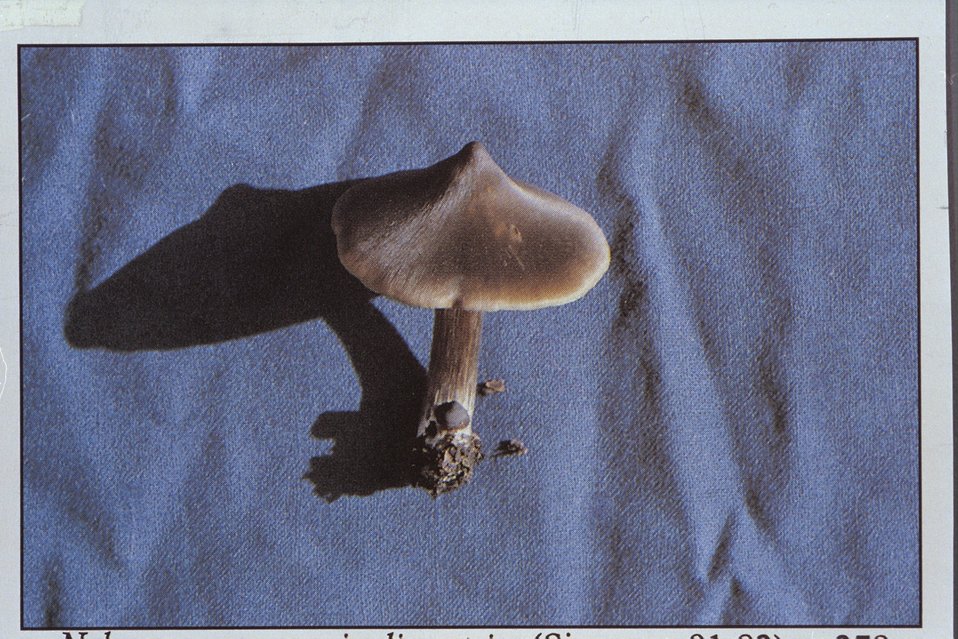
Mushroom laying on what looks like a sheet.